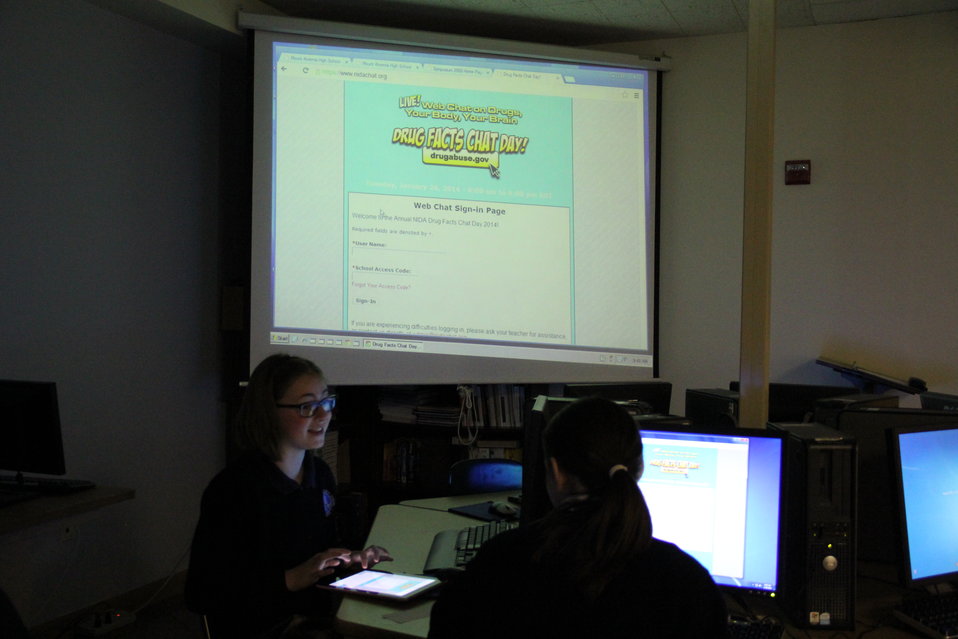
MA Teens are Taking the IQ Challenge

Teens at Mount Alvernia High School in Newton, Mass. take the NIDA's IQ Challenge during CHAT DAY 2014